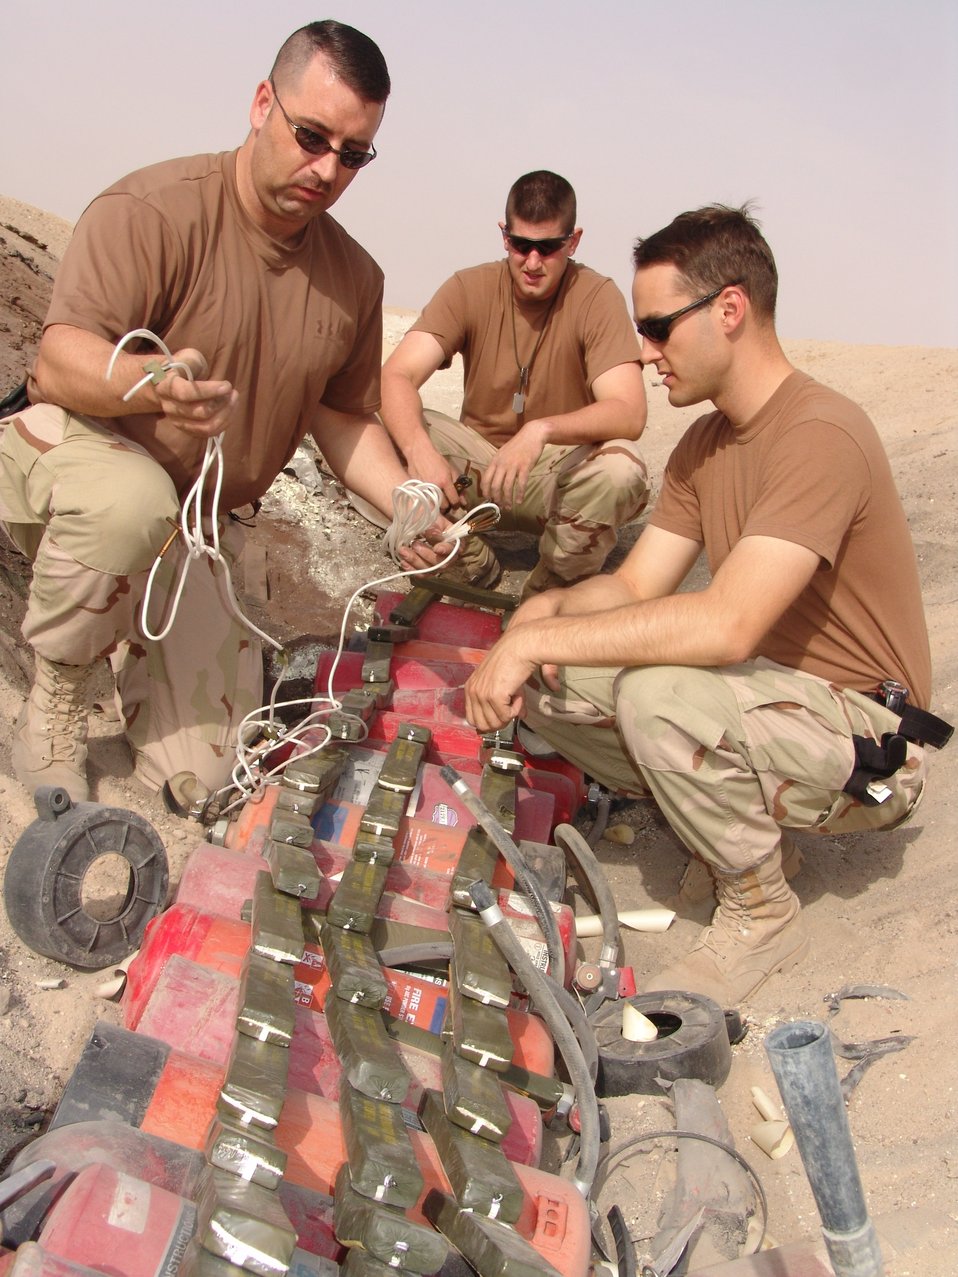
Explosive line

SOUTHWEST ASIA -- (From left) Staff Sgt. Ray Pomeroy, Airman 1st Class Jeremy Pye and Senior Airman Nathan Jones prepare C-4 explosives with detonation cords and blasting caps during ordnance disposal operations at a forward-deployed location. They are assigned to the 386th Expeditionary Civil Engineer's Squadron explosive ordnance disposal flight and are deployed from Kadena Air Base, Japan.